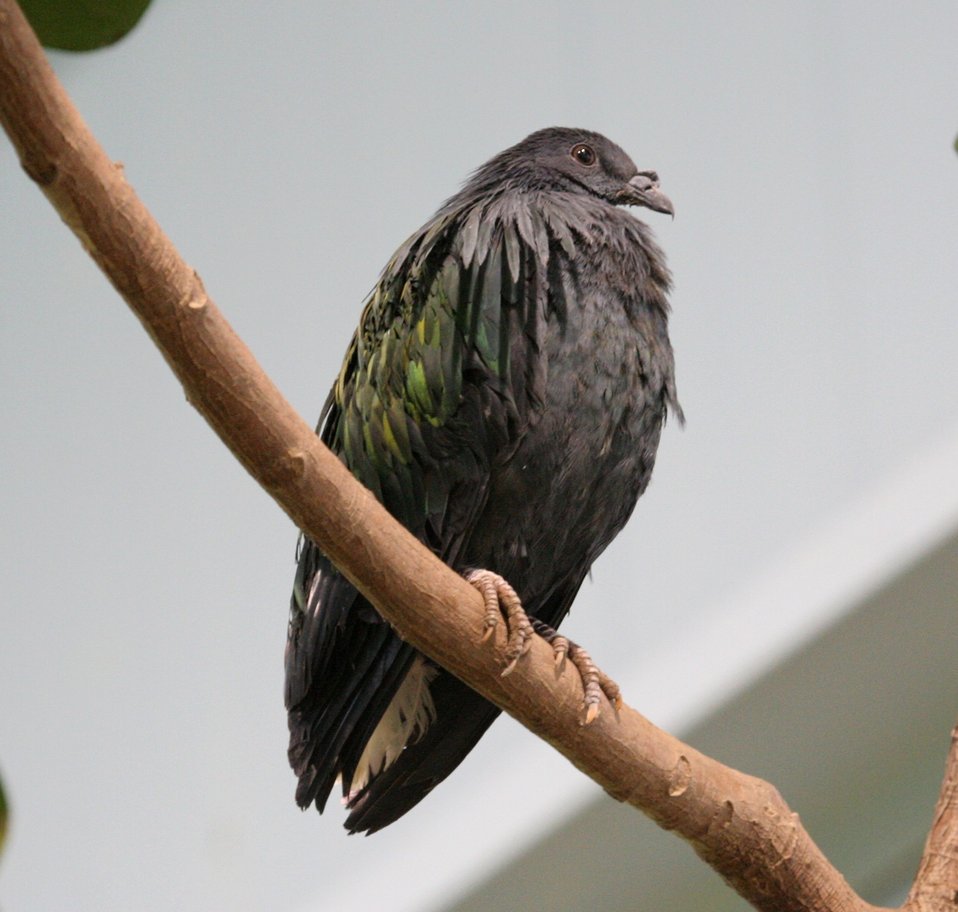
Nicobar Pigeon (Caloenas nicobarica) at the Rosamond Gifford Zoo, Syracuse, New York.